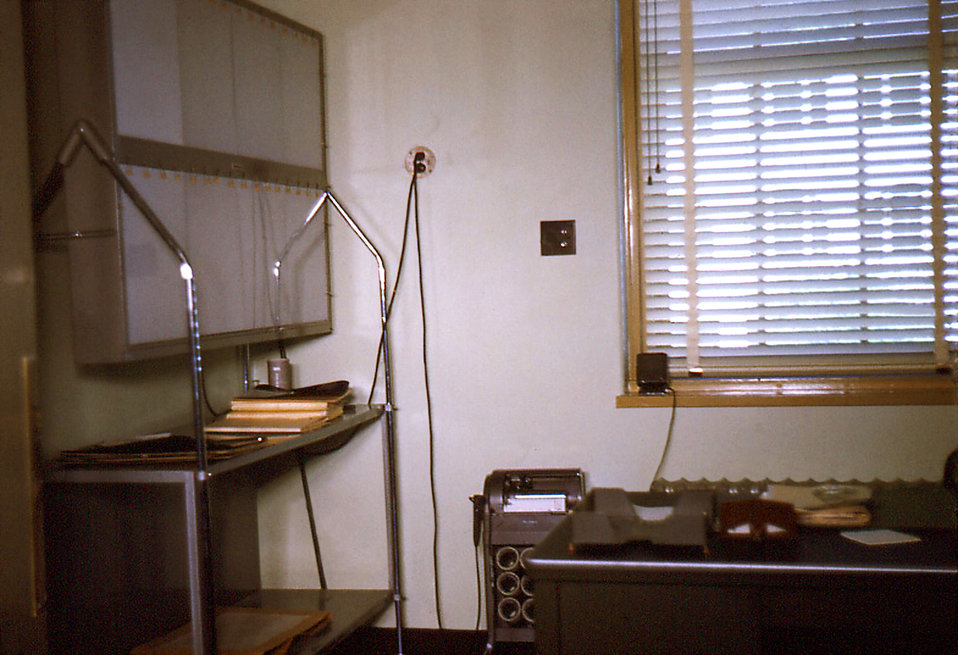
Depicted in this historic image was the office of the Carville, Louisiana Leprosarium's Executive Officer who was a medical doctor. Note the bank of x-ray viewing boxes on the wall to the left.The National Hansen's Disease Museum's (NHDM) mission is to collect, preserve and interpret the medical and cultural artifacts of the Carville Historic District. In addition, we want to promote the understanding, identification, and treatment of Hansen's Disease (leprosy). We fulfill this mission by creating and maintaining museum displays, traveling exhibits, publications and a website in order to educate and inform the public on all levels.